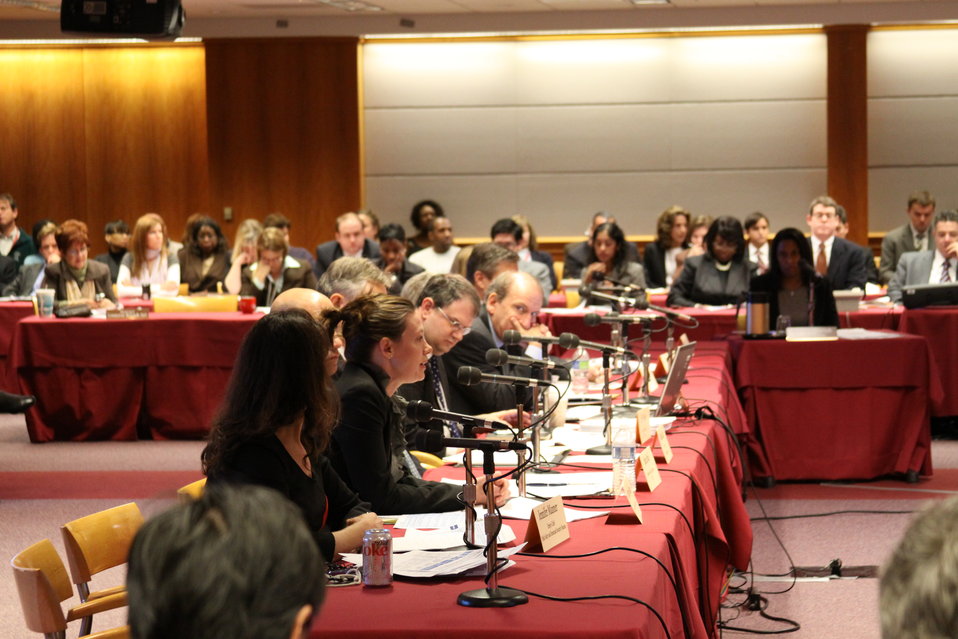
December Commission Meeting